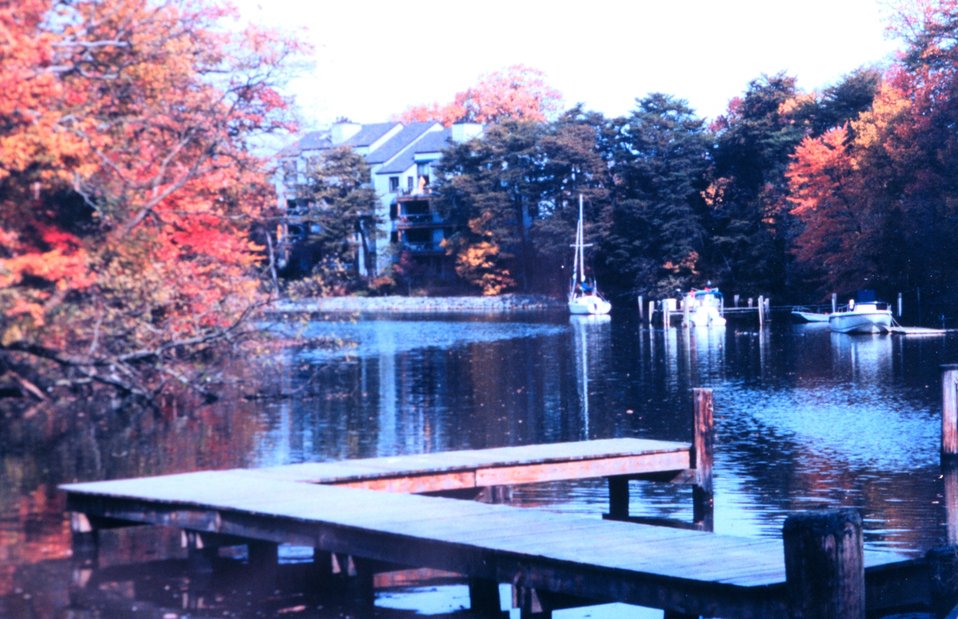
A view of Spa Creek at Annapolis.